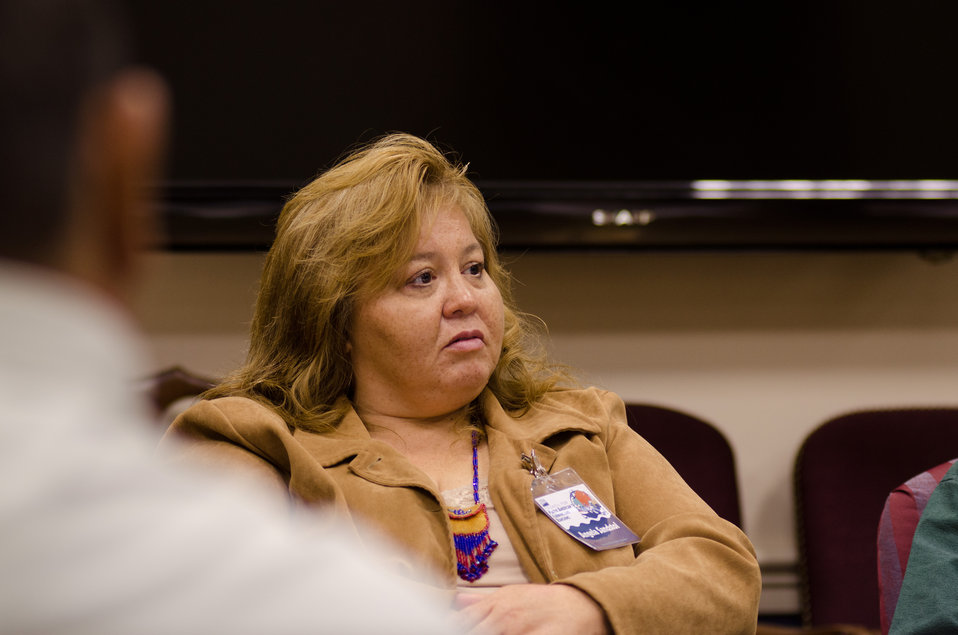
Natural Resources and Conservation official Angela Sandstol of the Native Village of Tyonek, Tyonek, Alaska, during the first administrative/training meeting of the U.S. Department of Agriculture's (USDA) Council for Native American Farming and Ranching (CNAFR), held on Monday, Aug. 13, 2012 at the USDA headquarters Whitten Building, in Washington, D.C. CNAFR was created to advise the Secretary on ways to eliminate barriers to participation for Native American Farmers and Ranchers in USDA programs. The Council was established as part of the Keepseagle settlement, and is conducted under the oversight of USDA's Office of Tribal Relations, which is part of the Office of the Secretary of Agriculture. The Director of Tribal Relations Joanna Mounce Stancil serves as Designated Federal Official (DFO) for the Council.